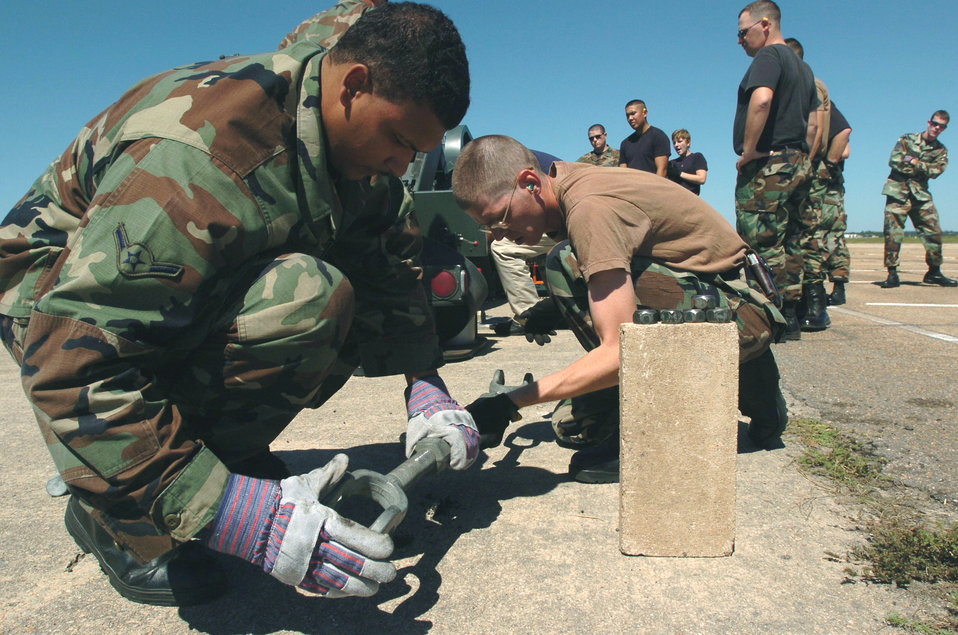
A perfect fit

SHAW AIR FORCE BASE, S.C. -- Airman Brandon Cordle (foreground) and Senior Airman Christopher Pruett assemble a turnbuckle that will be used for stabilizing a Mobile Aircraft Arresting System here. Airman Cordle is assigned to the 1st Civil Engineer Squadron at Langley Air Force Base, Va. Airman Pruett is assigned to the 27th CES at Cannon AFB, N.M.